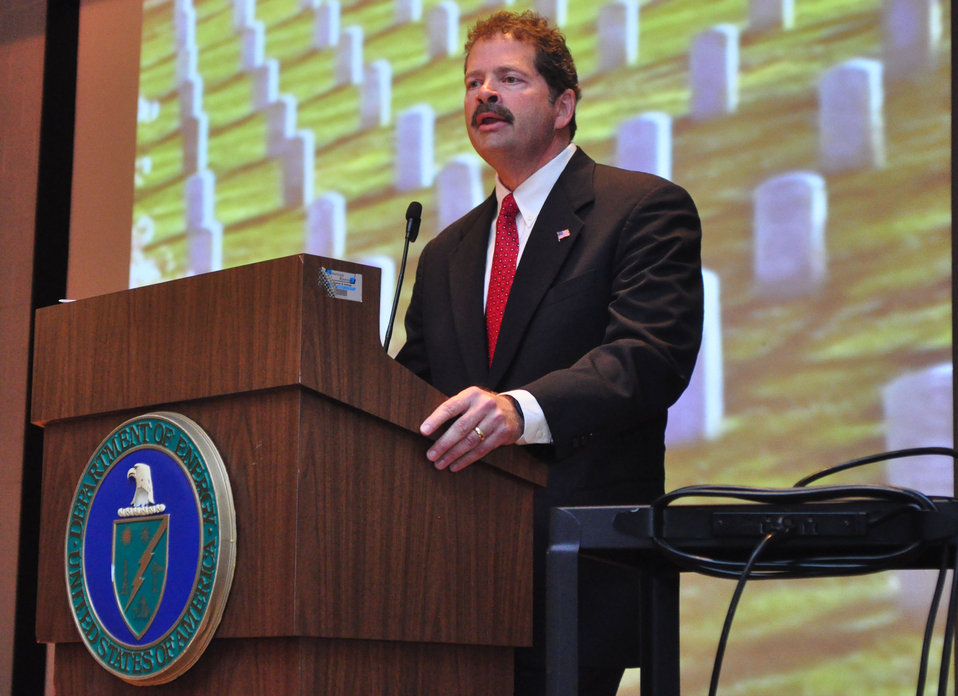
Kevin Hall, DOE-ORO Deputy Manager at Veteran's Day Event Oak Ridge 2013

13-129 DOE photo Lynn Freeny 11-7-2013 Oak Ridge Tennessee